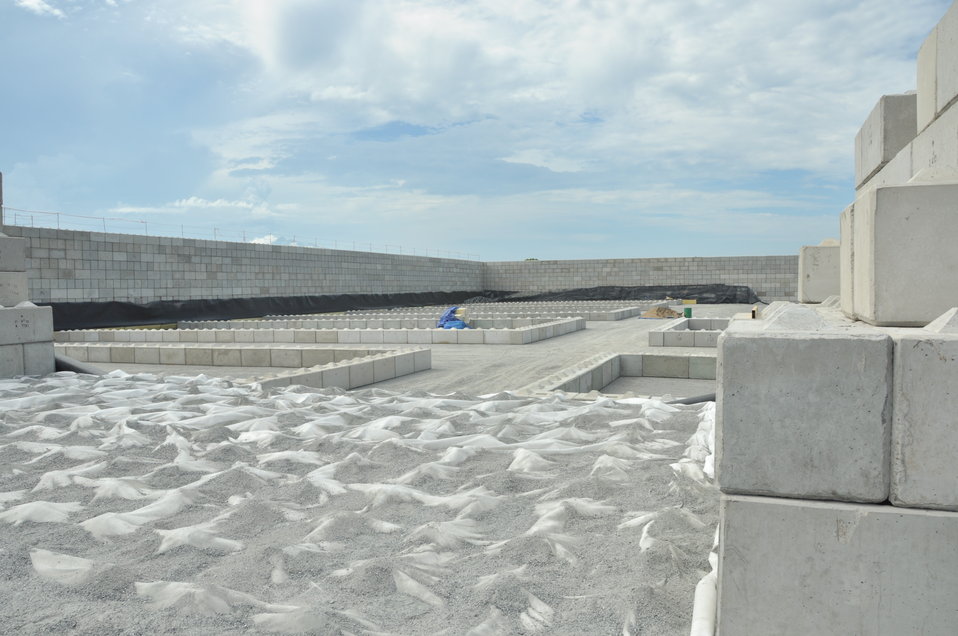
Site construction at the Environmental Remediation of Dioxin Contamination at Danang Airport

Progress at the Danang Airport remediation site
April 23, 2013